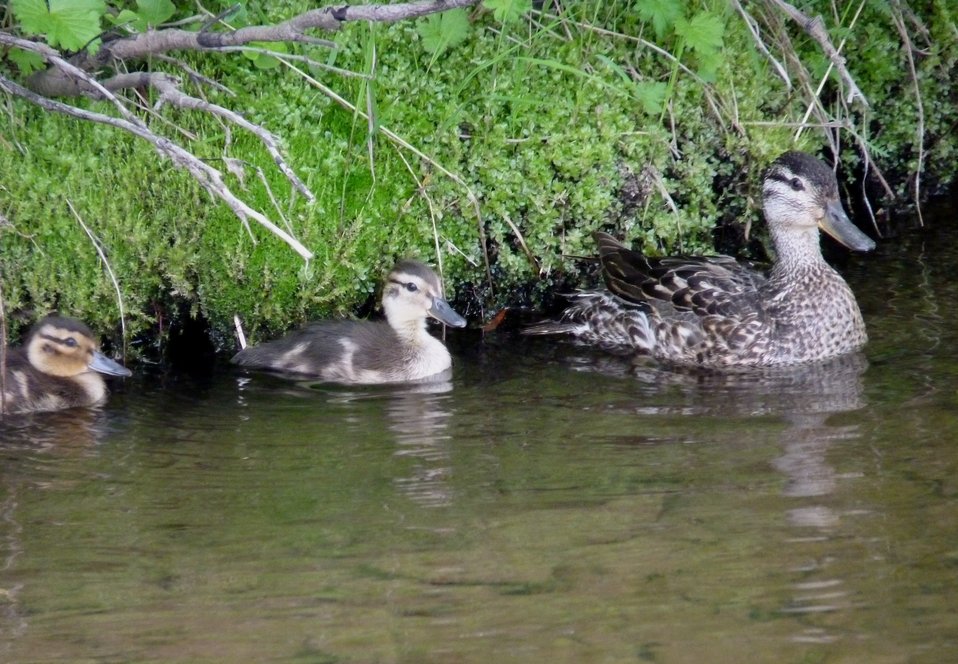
Green-winged Teal brood

Andreafsky wilderness, Yukon Delta National Wildlife Refuge